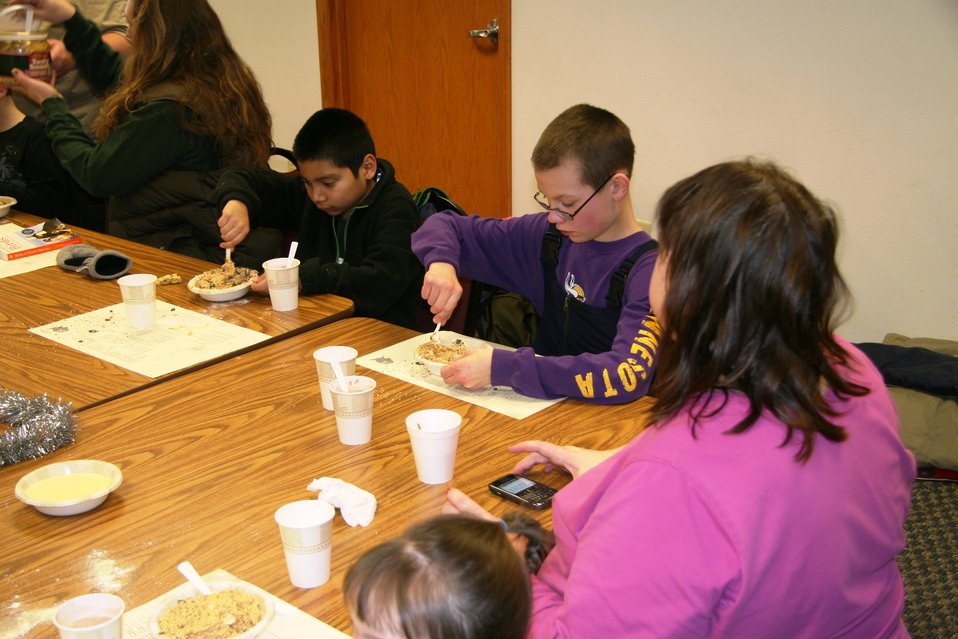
CBC4kids

Busy making high energy suet treats for the birds!